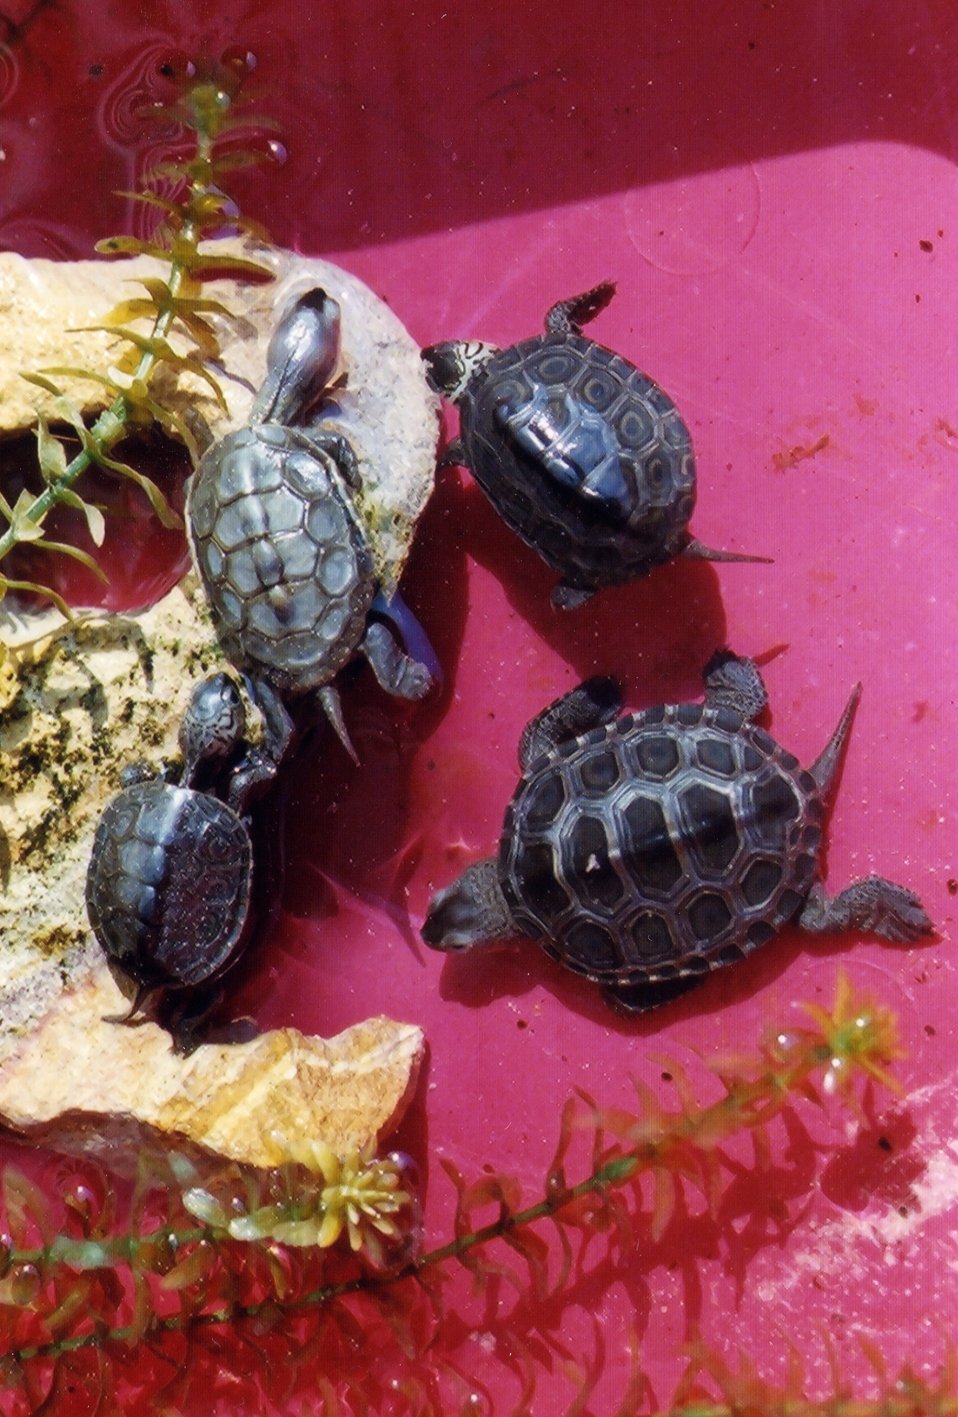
Baby terrapins from the same year class having various sizes, shapes, and markings.